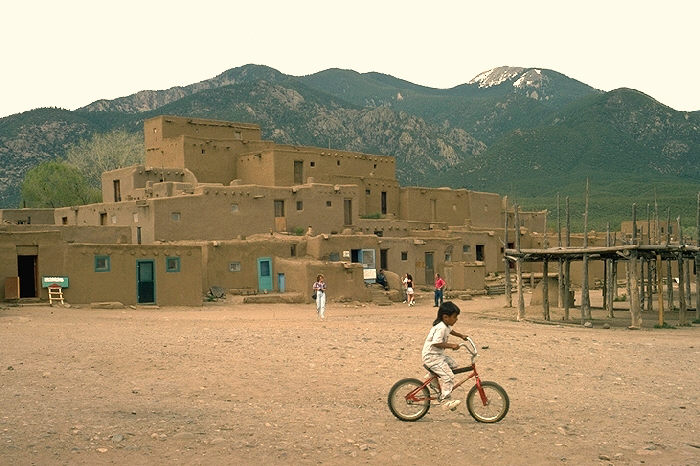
Native American child riding bicycle at Taos Pueblo, Taos, New Mexico.